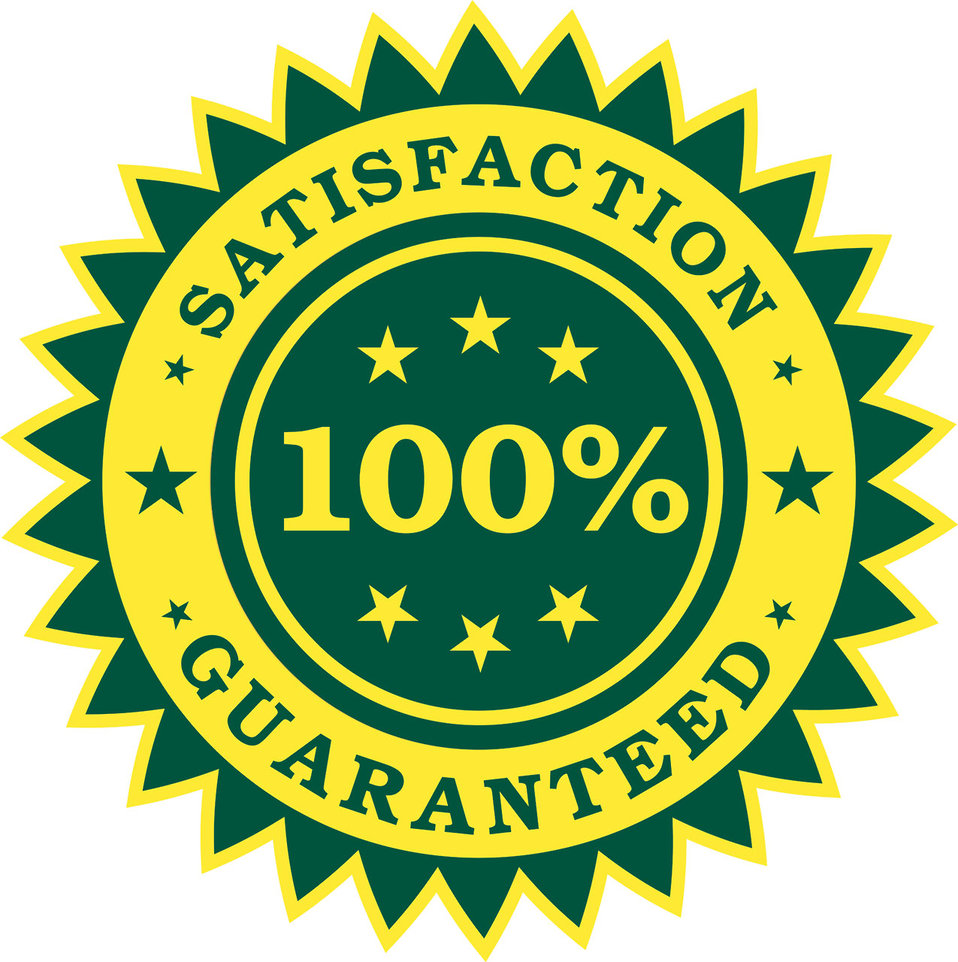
Satisfaction guaranteed sticker. also available in vector format at vectorportal.com.